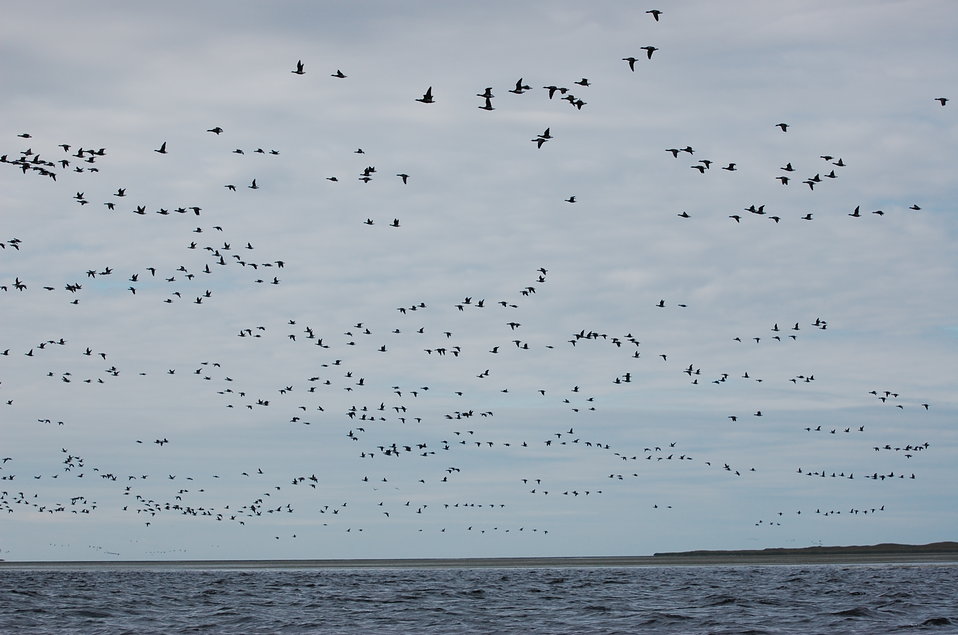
Brant at Izembek Lagoon

Izembek National Wildlife Refuge